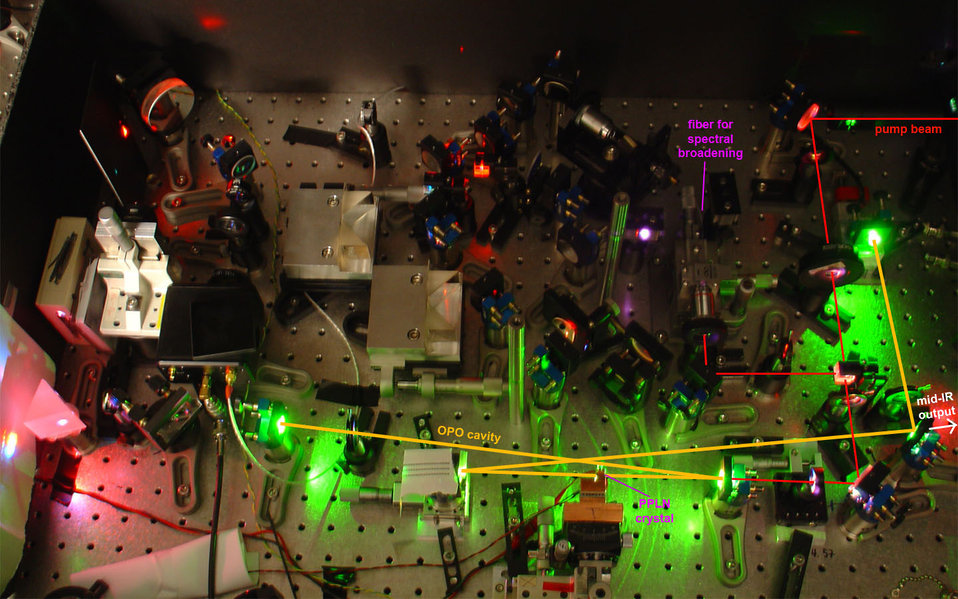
Comb Apparatus

This colorful apparatus is a key part of the JILA frequency comb instrument used to measure trace gases for biomedical applications. The beam from a powerful fiber laser is converted by a special crystal and other optics into two light waves at lower frequencies. The system can detect and measure the concentration of many different molecules based on how they absorb light in the mid-infrared region of the electromagnetic spectrum.